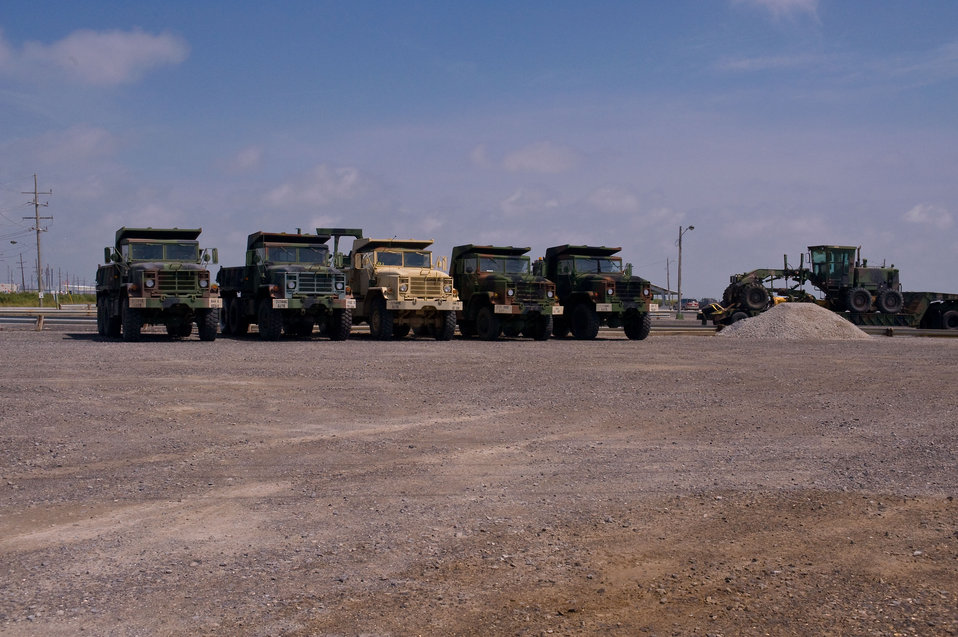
June 1, Staging area for shoreline cleanup, Lafourche, LA

Troops and equipment have been deployed for weeks along the Gulf Coast. Lafourche, LA.